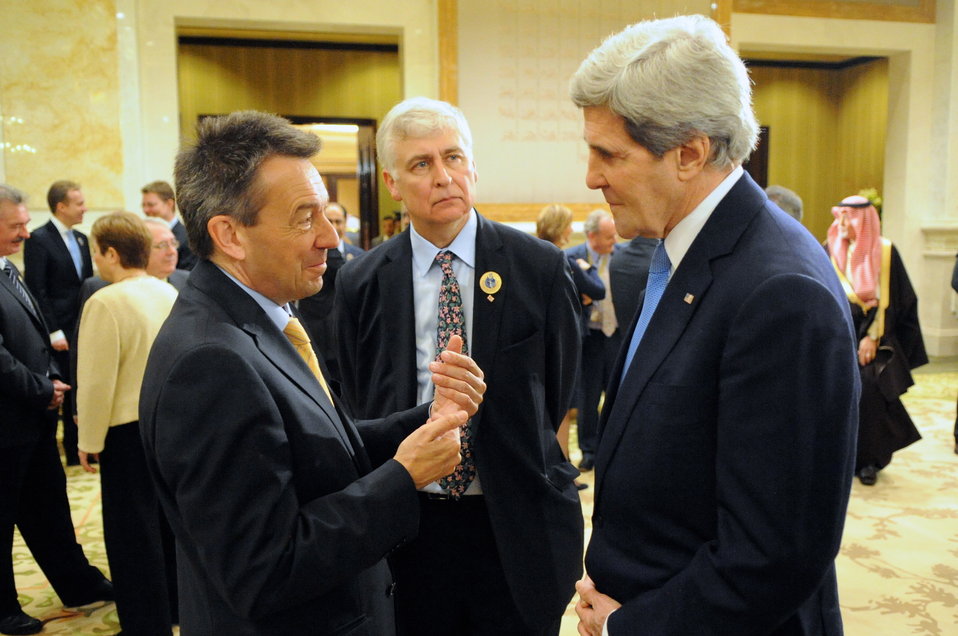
Secretary Kerry Speaks With Red Cross Officials Before Syrian Donors' Conference

U.S. Secretary of State John Kerry speaks with officials from the International Red Cross before the start of the Syrian Donors' Conference in Kuwait City, Kuwait, on January 15, 2014.